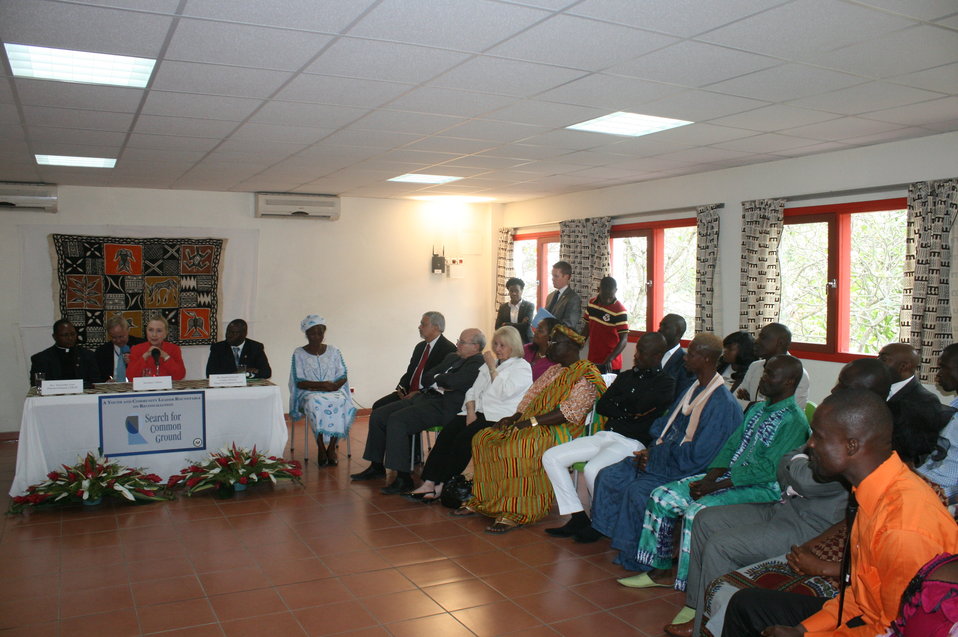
Secretary Clinton Participates in a Roundtable Discussion

U.S. Secretary of State Hillary Rodham Clinton participates in a roundtable discussion with youth and community leaders at the Center for Research and Action for Peace in Abidjan, Cote d’Ivoire, on January 17, 2012. Also pictured in the photo are: Rev. Hyacinthe Loua, Director General Centre de Recherche et d’Action pour la Paix (CERAP); Marcel; and Quentin Kanyatsi, Country Director Search for Common Ground.